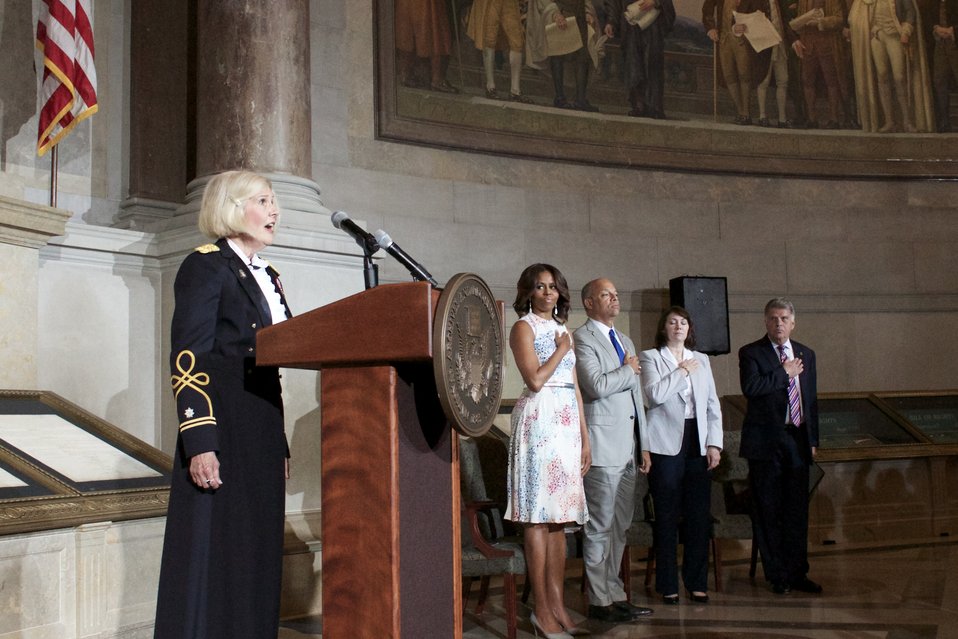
Naturalization Ceremony with Michelle Obama